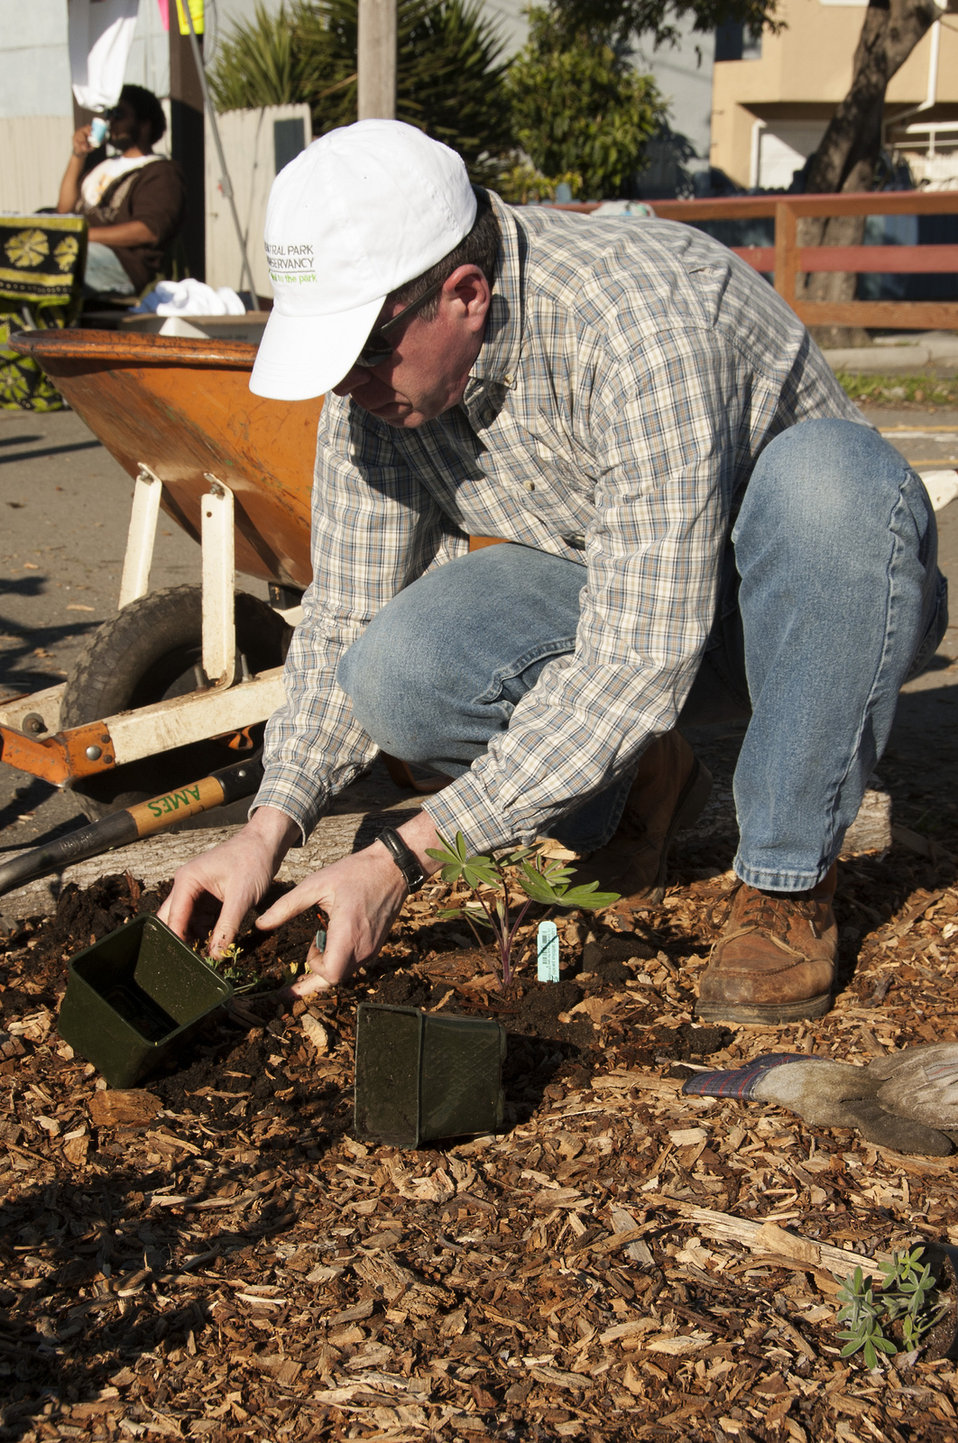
Edible forest friend Alex

U.S. Forest Service Pacific Southwest Research Station Director Alex Friend readies plants for the Richard, CA Edible Forest. The Forest Service is part of a larger effort by Urban Title to connect with residents, particularly children, to help them learn more about their local environment.